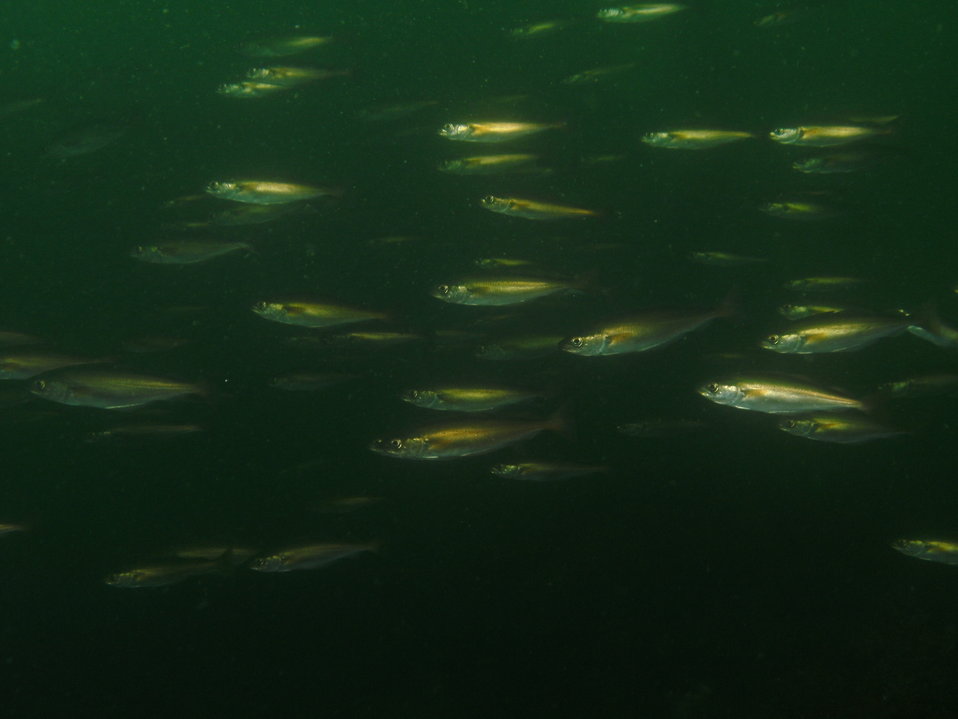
August 7, 2012 Surrounded by Pollock!

While diving in harbors and estuaries in northern New England, it is not uncommon to have large schools of silvery fish swim by. 'The sensation of being surrounded by hundreds or thousands of fish is a unique experience. It certainly gives you an appreciation for the bounty and productivity of the sea.' - EPA Diver Phil Colarusso

Pollock is one of several species of schooling fish known to transit the harbors and estuaries of New England. Pollock are active pelagic fish feeding primarily on small fish, pelagic crustaceans and copepods. They in turn serve as prey for gray seals, harbor seals, spiny dogfish and in some locations minke whales.

Find out more about EPA Dive work